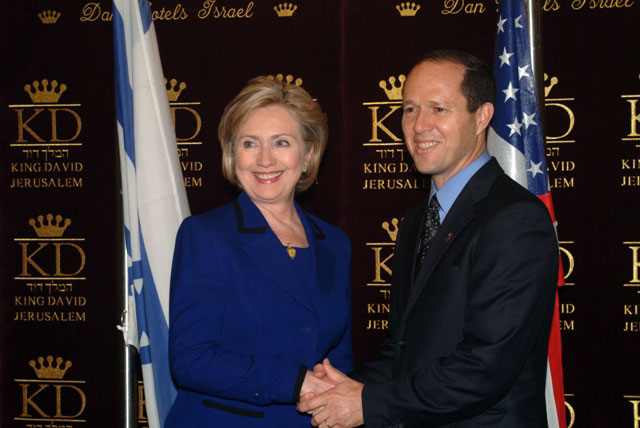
Secretary Clinton meets Jerusalem Mayor Nir Barkat and the King David hotel in Jerusalem March 3, 2009.